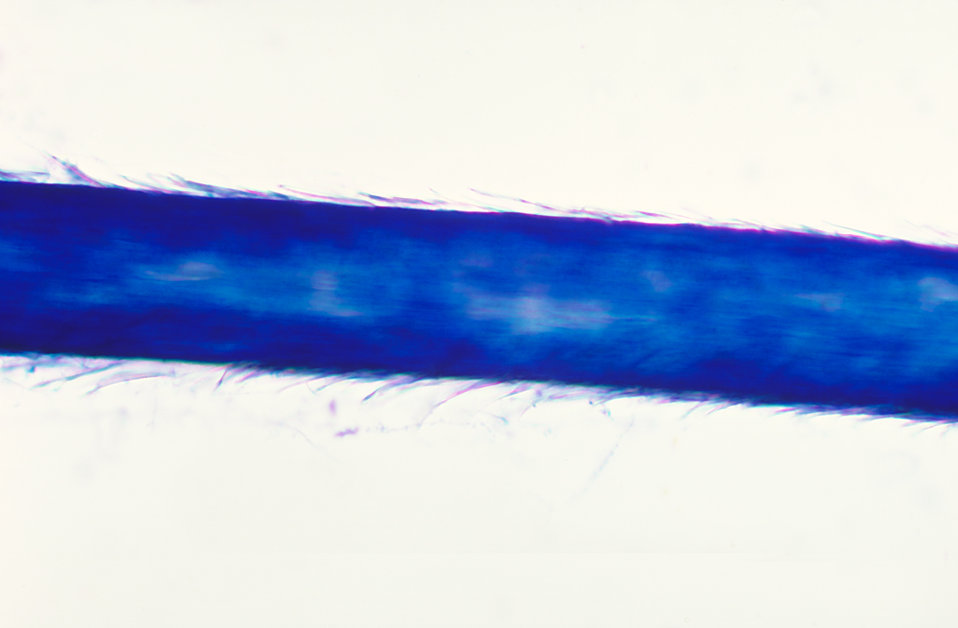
This slide was created during a hair perforation test for the zoophilic fungus Microsporum equinum.